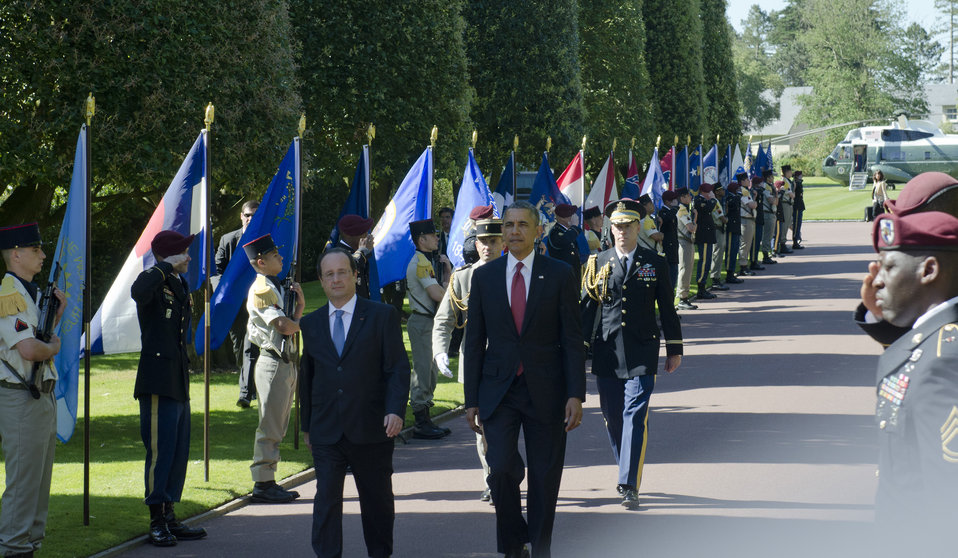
President Obama and French President Hollande Arrive at the Normandy American Cemetery

U.S. President Barack Obama and French President Francois Hollande arrive at the Normandy American Cemetery at Omaha Beach as he participates in the 70th anniversary of D-Day in Colleville sur Mer in Normandy, France, on June 6, 2014.